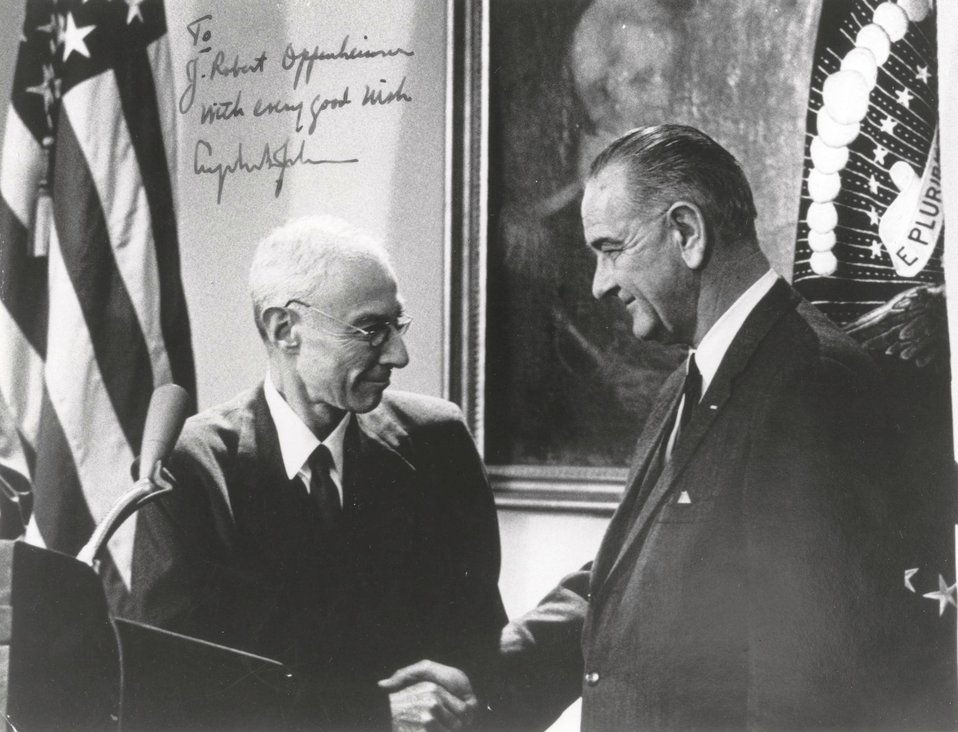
R. OPPENHEIMER RECEIVES ENRICO FERMI AWARD FROM LBJ